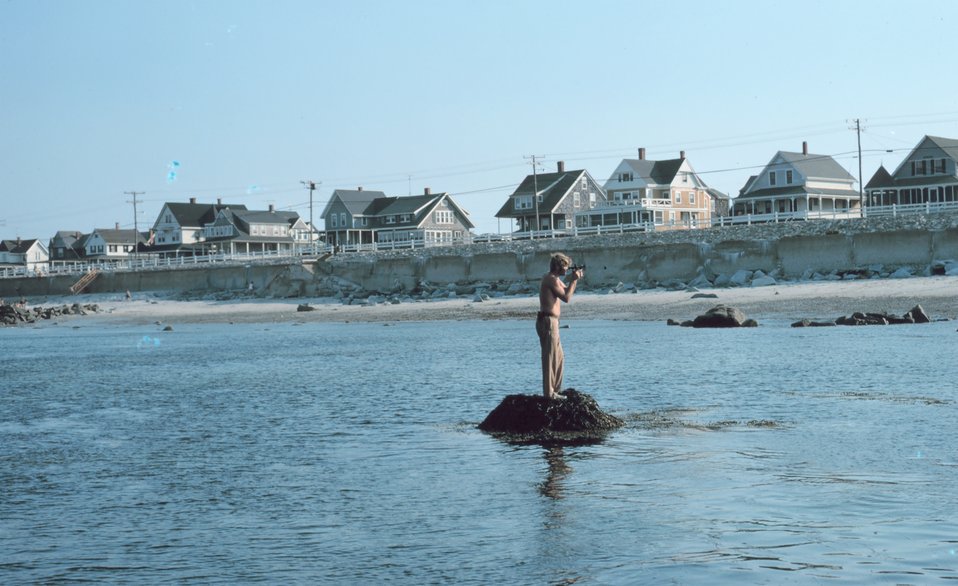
Using a hydrographic sextant to position an offshore rock.